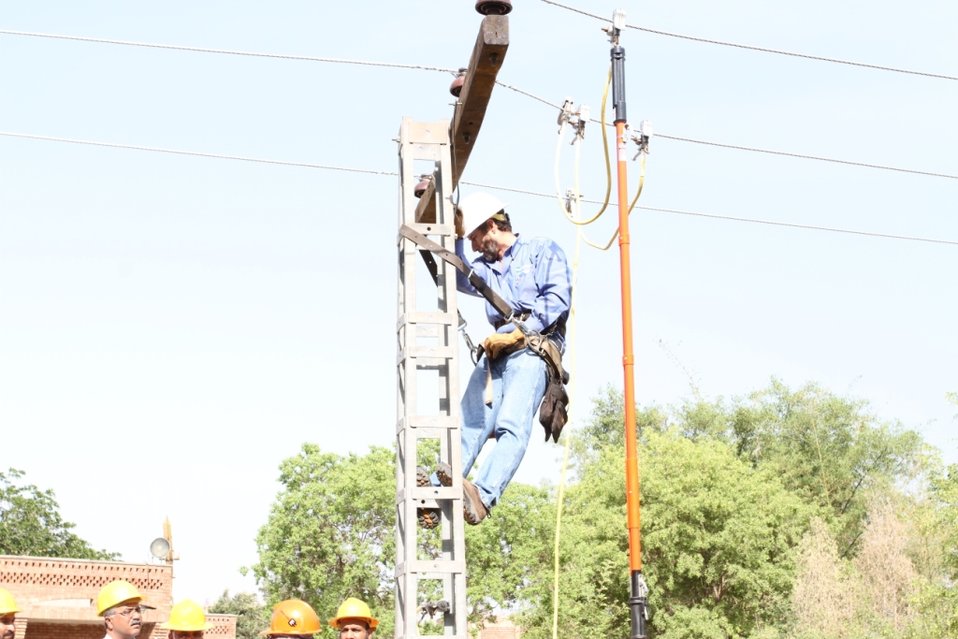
Quick Impact Safety Training Program for IESCO

Islamabad, May 21, 2012: The United States Government through the United States Agency for International Development (USAID) “Quick Impact Lineman Training Program” will help in save thousands of linemen in Pakistan. At the concluding session of today’s training program held at the WAPDA Staff College, the deputy chief of party of USAID’s Power Distribution Program officially handed over linemen safety tools to distribution companies including the Islamabad Electric Supply Company (IESCO), Multan Electric Power Company (MEPCO), and Hyderabad Electric Supply Company (HESCO). USAID has provided safety trainings to over 415 linemen and will provide training to thousands more in the coming months.